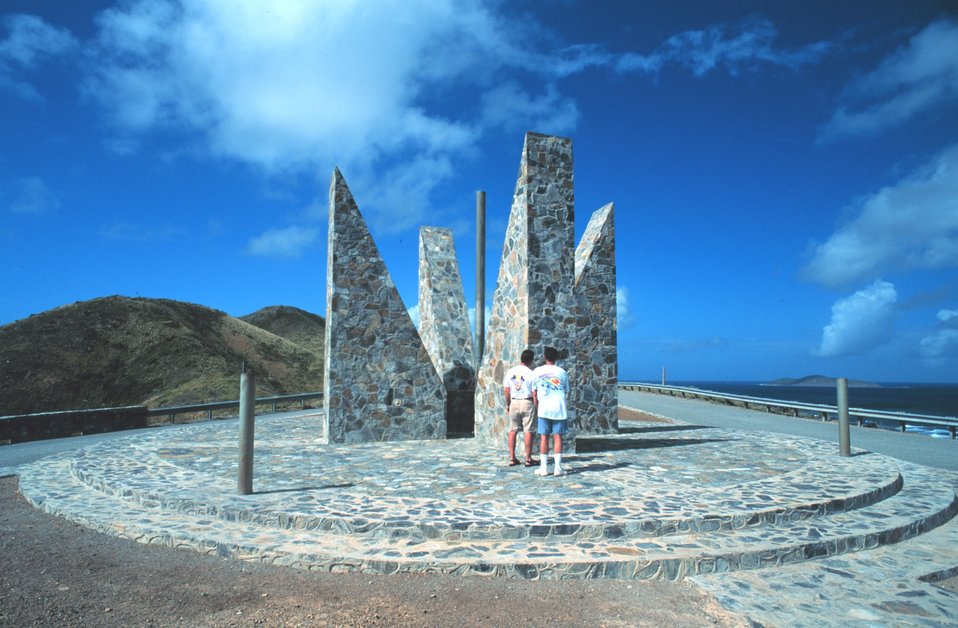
Point Udall Millennium Monument. A sundial was erected here, the easternmost point of United States Territory to commemorate the coming of the new millennium . The marker represents 'a continuum between all who have come before and all who are yet to come.'